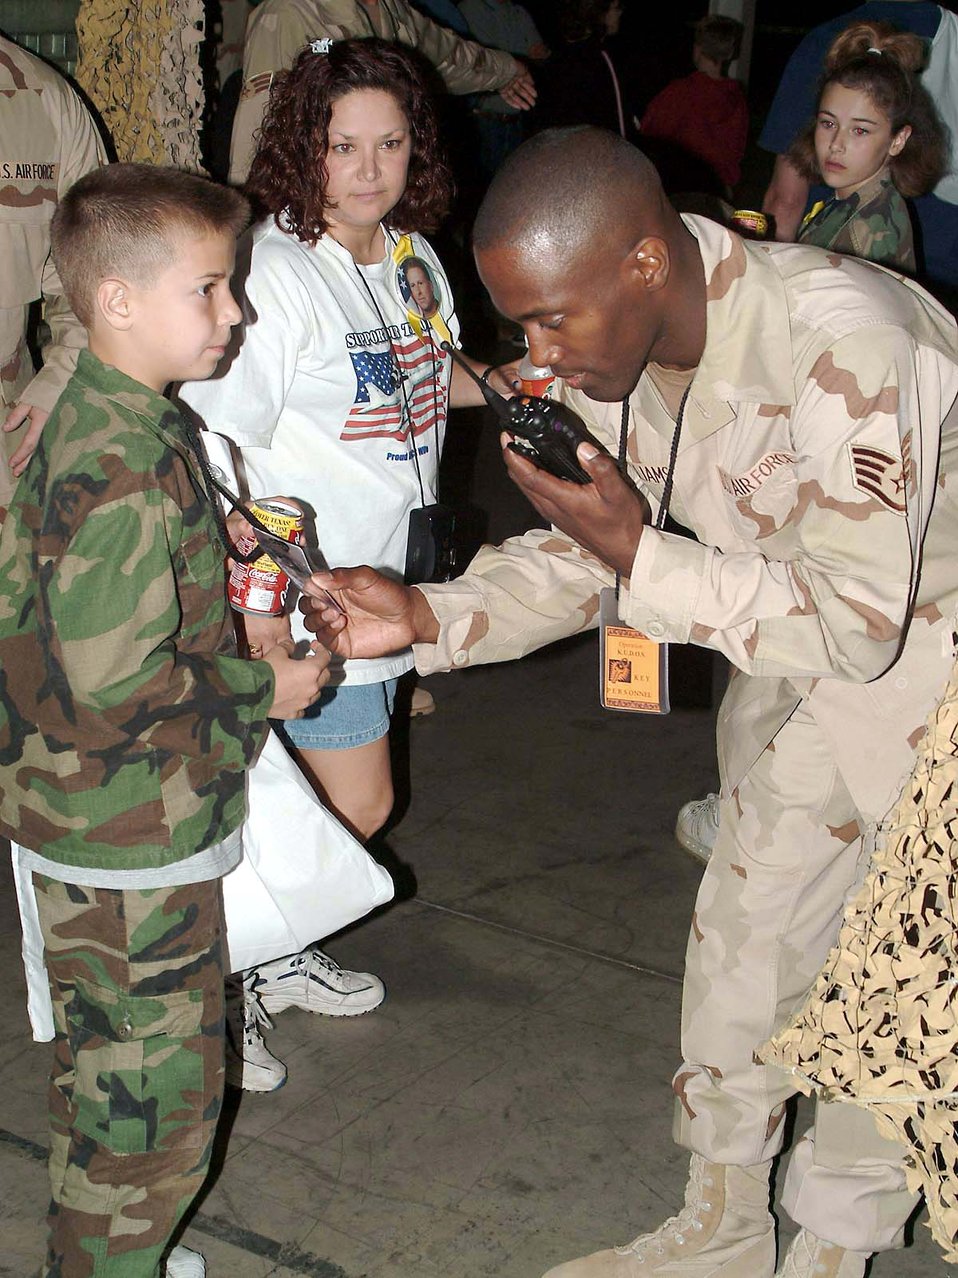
ID please...

TINKER AIR FORCE BASE, Okla. -- Staff Sgt. Norman Williams checks the ID card of Zach Harlow before he is allowed to access